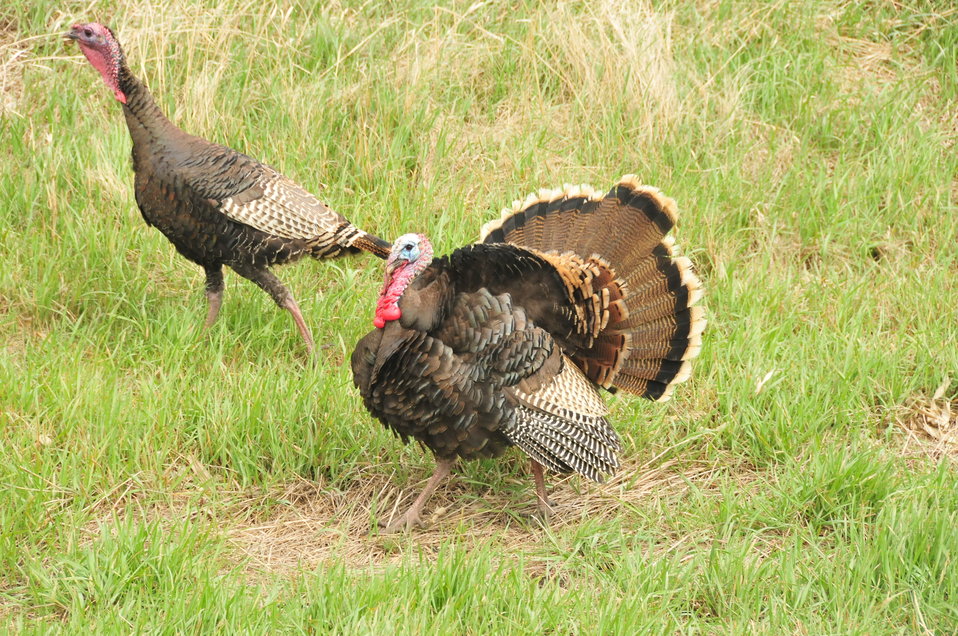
Merriams Turkeys

A Merriams turkey gobbler struts for a hen in the Sand Lake WMD.